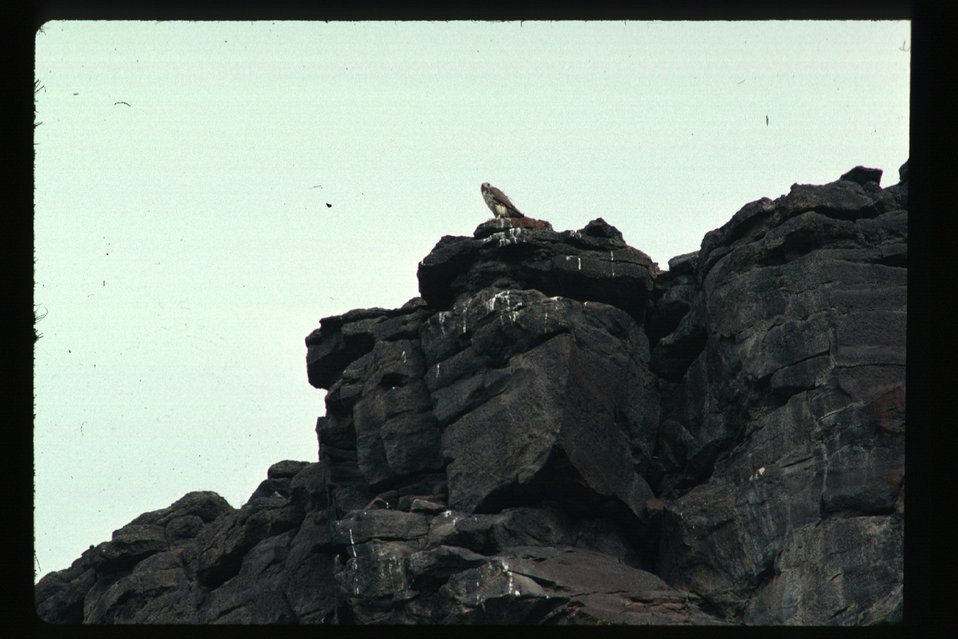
Prairie Falcon on Cliff Birds of Prey National Conservation Area BOP NCA Owyhee Field Office LSRD Lower Snake River District